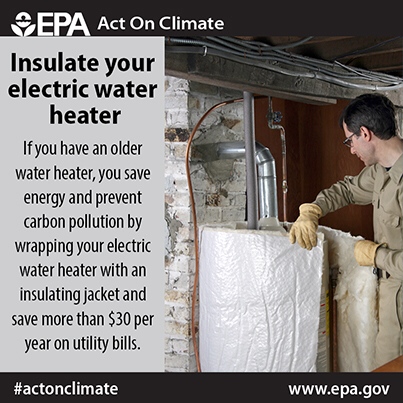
By insulating your electric water heater you can save $30 annually and #ActOnClimate.